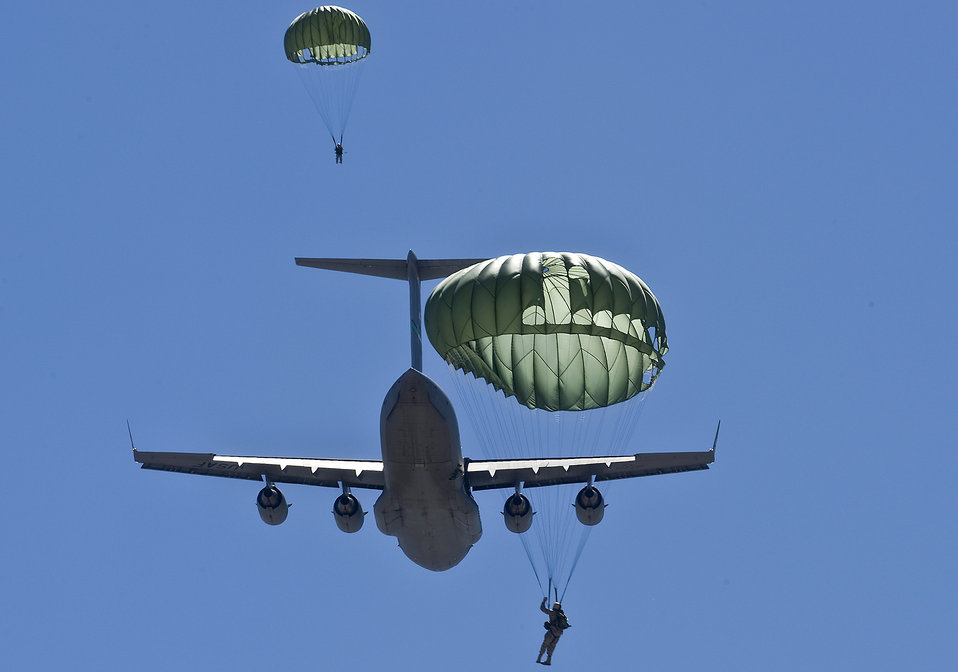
RED HORSE airborne flight

Airmen assigned to the 820th RED HORSE Squadron jump from a C-17 Globemaster III May 12, 2011, during a training exercise above Alamo, Nev.